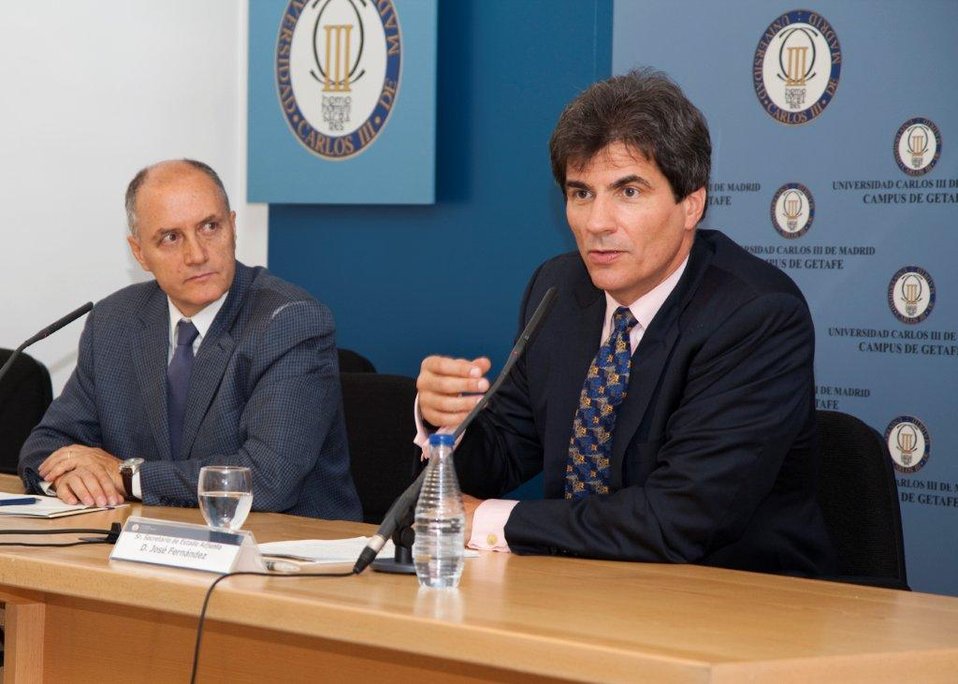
Assistant Secretary Fernandez Addresses Students at Carlos III University

Assistant Secretary of State for Economic, Energy and Business Affairs Jose Fernandez addresses students at Carlos III University, in Madrid, Spain, on September 30, 2011.